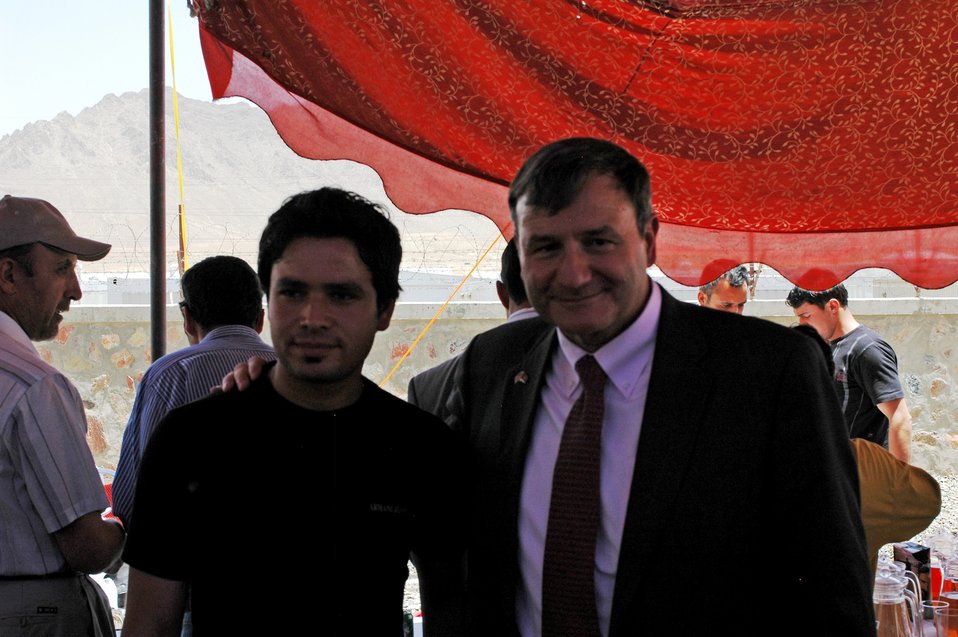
105 MW Tarakhil Power Plant Handover